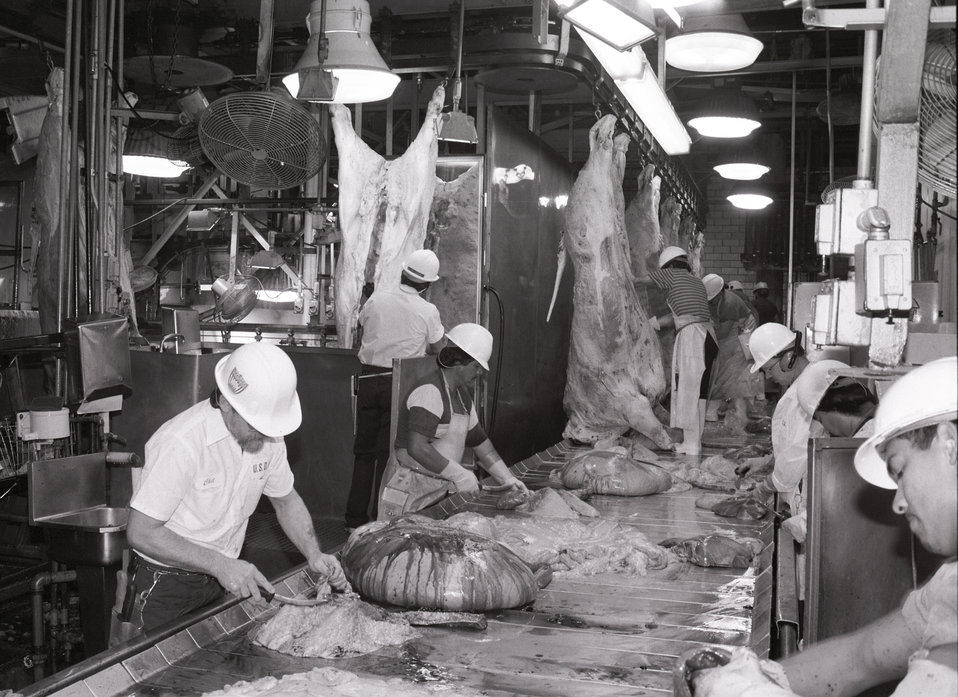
U.S. Department of Agriculture (USDA) Food Safety Inspection Service (FSIS) inspectors inspect beef using a Streamline Inspection System (SIS) at a processing plant in Plainview, TX on January 22, 1991.